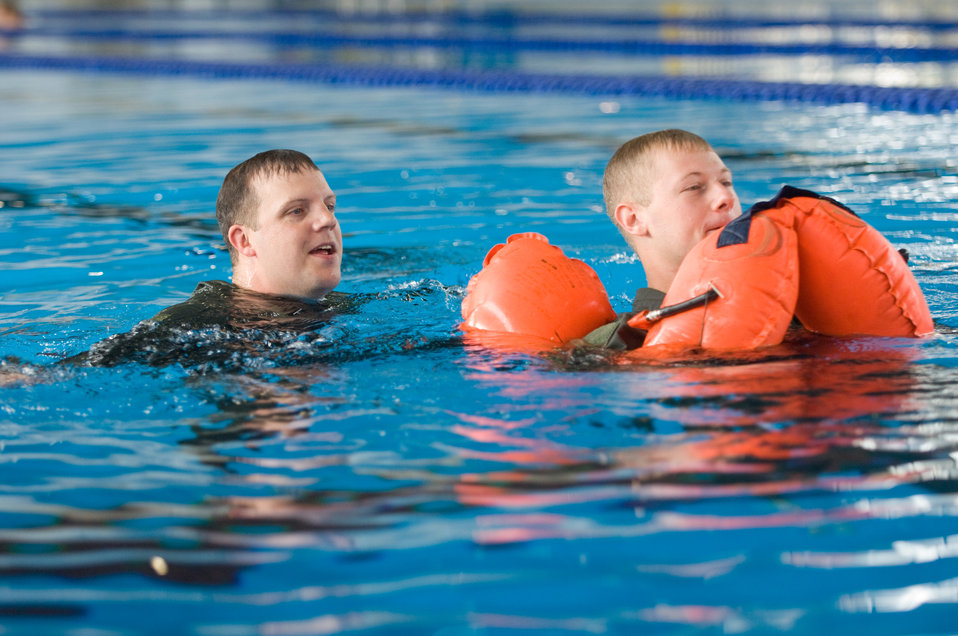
No easy day at the pool

Staff Sgt. Benjamin Rosciglione, 374th Operations Support Squadron Survival, Evasion, Resistance and Escape specialist, (left) teaches an aircrew member how to drag another crew member to safety during water survival refresher training recently at the natatorium indoor pool at Yokota Air Base, Japan. SERE technicians teach the course to aircrew members at least once every three years.